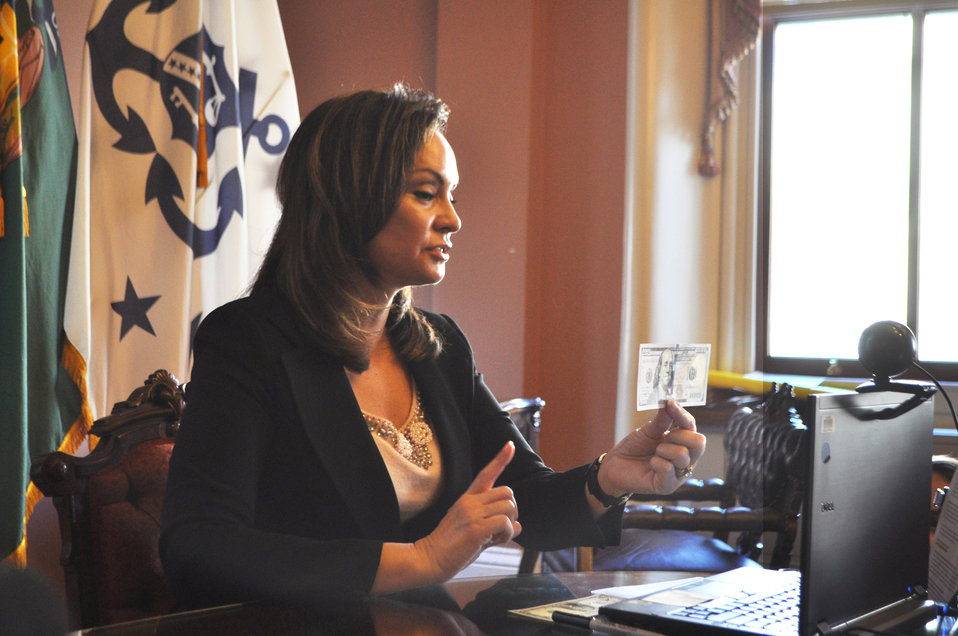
Treasurer Rosie Rios chats with Ready.Save.Grow contest winner via Skype

Treasurer Rosie Rios shows off a new 100-dollar bill to students in a virtual classroom visit with Rogers-Herr Middle School in Durham, NC. One of the students was a final grand prize winner in the Save Out Loud contest hosted by the Ready.Save.Grow campaign.